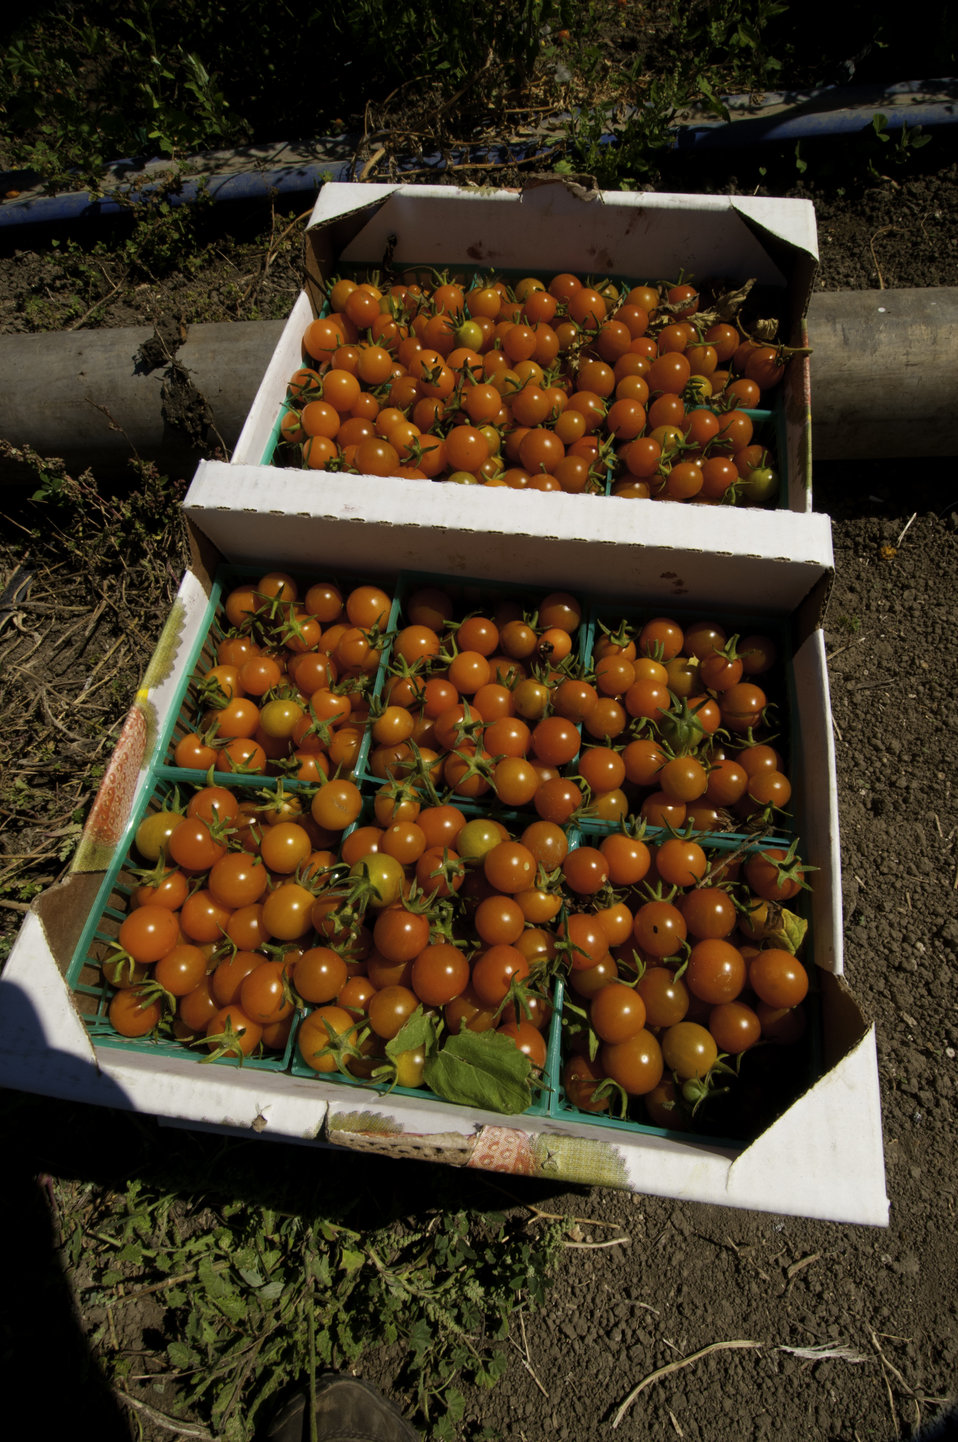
Tomatoes are harvested on Uesugi Farms in Gilroy, CA on Wednesday, Aug. 28, 2013.